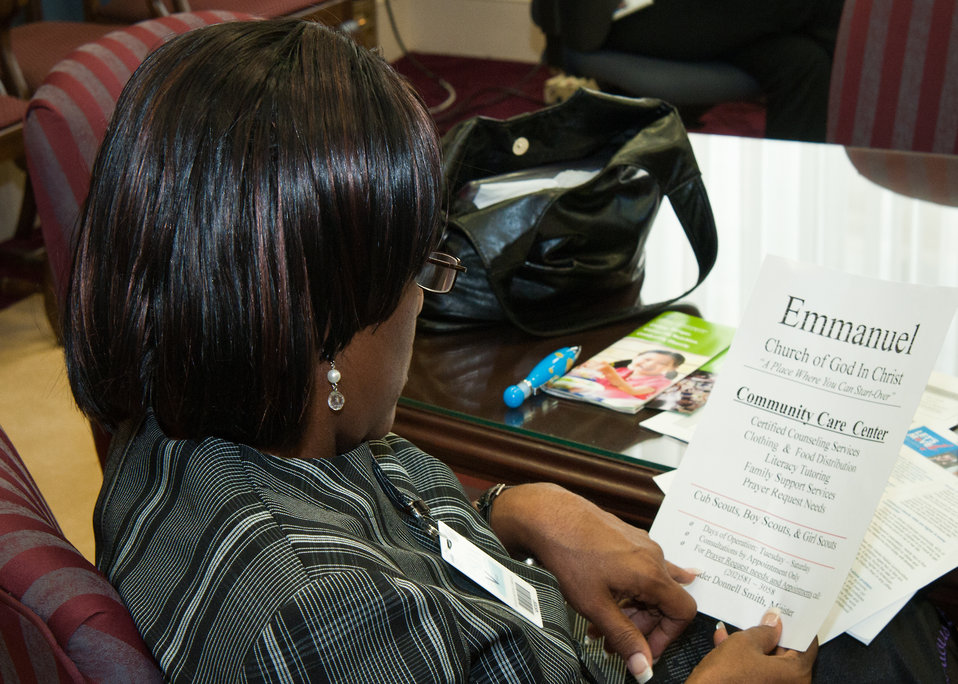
Sister Valerie Butler, Victorious Living, Church of God in Christ, Norfolk, Virginia reviews material from the Summer Food Service Program (SFSP) Webinar Watch Party hosted by the Center for Faith Based and Neighborhood Partnership at the United States Department of Agriculture, on Friday, May 13, 2011. Sister Butler and her pastor husband want to take feeding children to another level in their church. The SFSP is the single largest Federal resource available created by the USDA Food and Nutrition Service for local sponsors who want to combine a feeding program with a summer activity program.